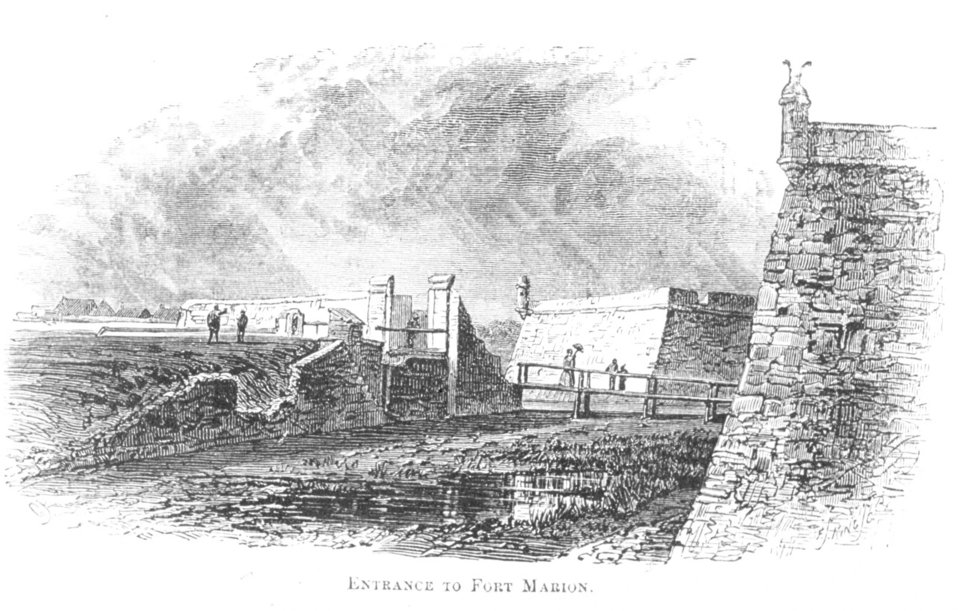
Entrance to Fort Marion - in 'Florida for Tourists, Invalids, and Settlers' by George M. Barbour, 1881. Library Call No. F316 .B23 1881. At St. Augustine.